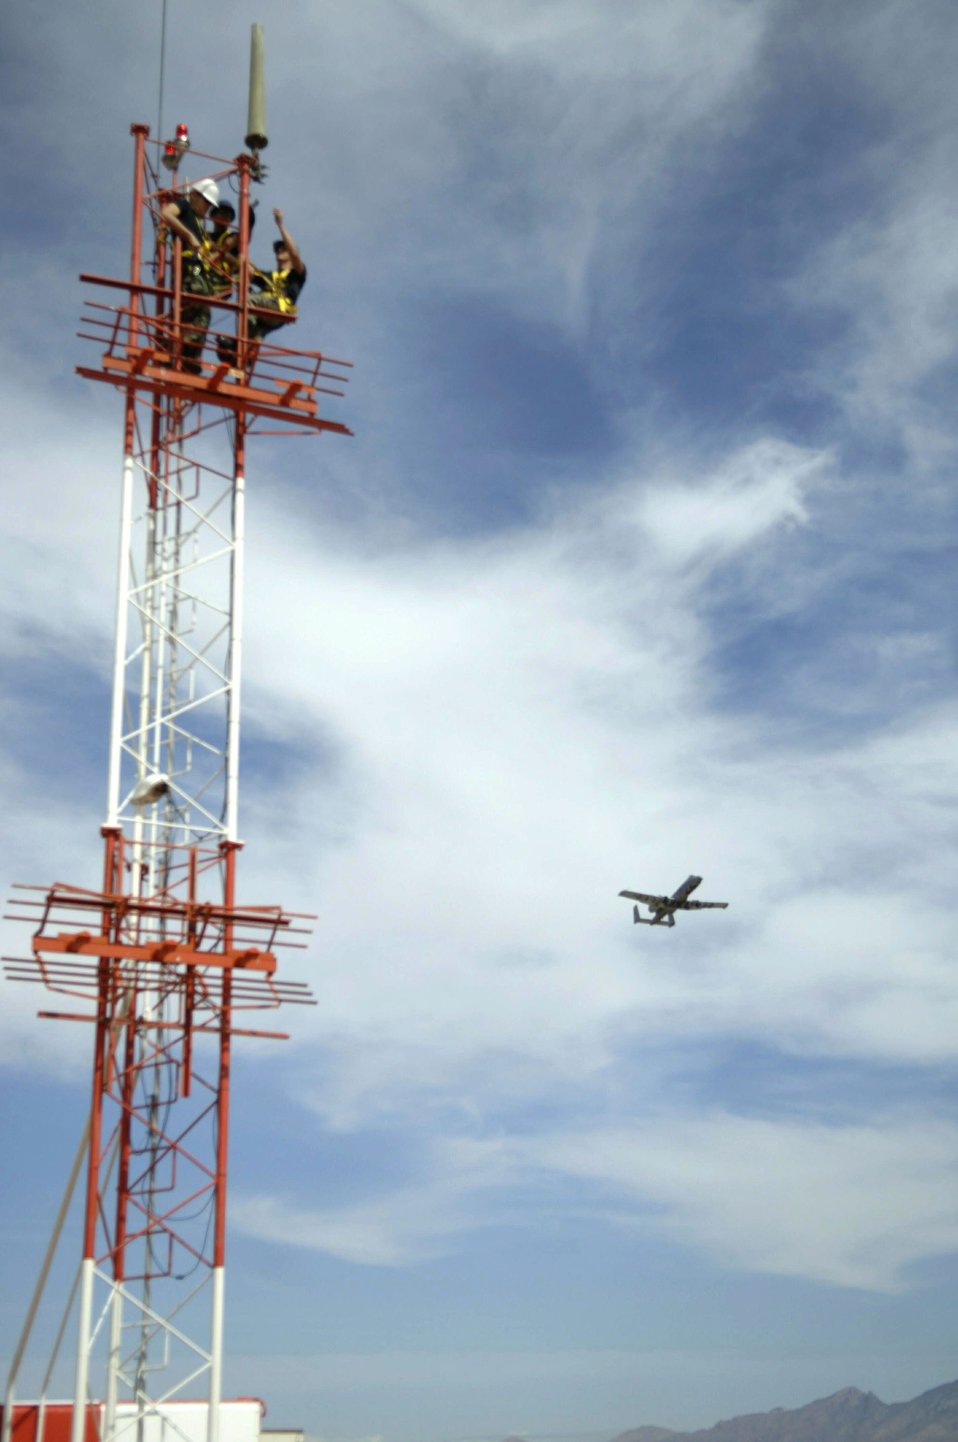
Tower maintenance

Airmen mount an AS-1181 antenna to the Glideslope antenna tower Wednesday, March 29, 2006, at Davis-Monthan Air Force Base, Ariz. The antenna was remounted to comply with lightning protection standards. It connects a very high frequency radio with the flight check office, which verifies calibration and alignment of airfield navigational equipment. The Airmen are airfield systems journeymen with the 355th Communications Squadron.